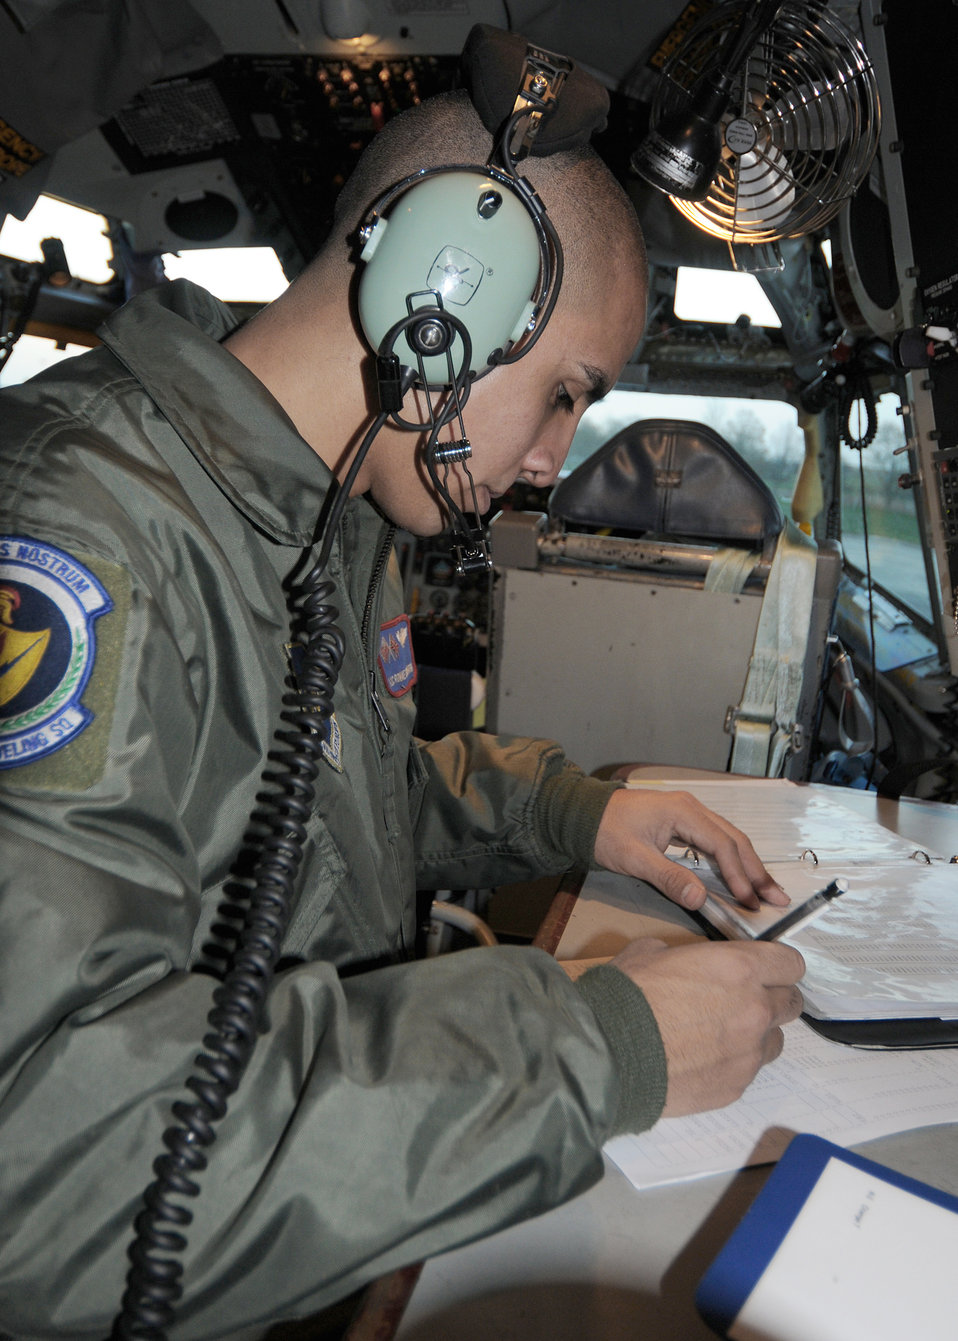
Partnership makes for expanded air refueling capabilities

Airman 1st Class Ronnie Echavarria, a 351st Air Refueling Squadron KC-135 Stratotanker boom operator, starts his mission paperwork before an air refueling training mission Nov. 12, 2010, at Royal Air Force Mildenhall, England. The crew of the KC-135 participated in the refueling training mission along with a C-17 Globemaster III from the Heavy Airlift Wing at Papa Air Base, Hungary. Boom operators at RAF Mildenhall rarely get the opportunity to refuel heavy aircraft.